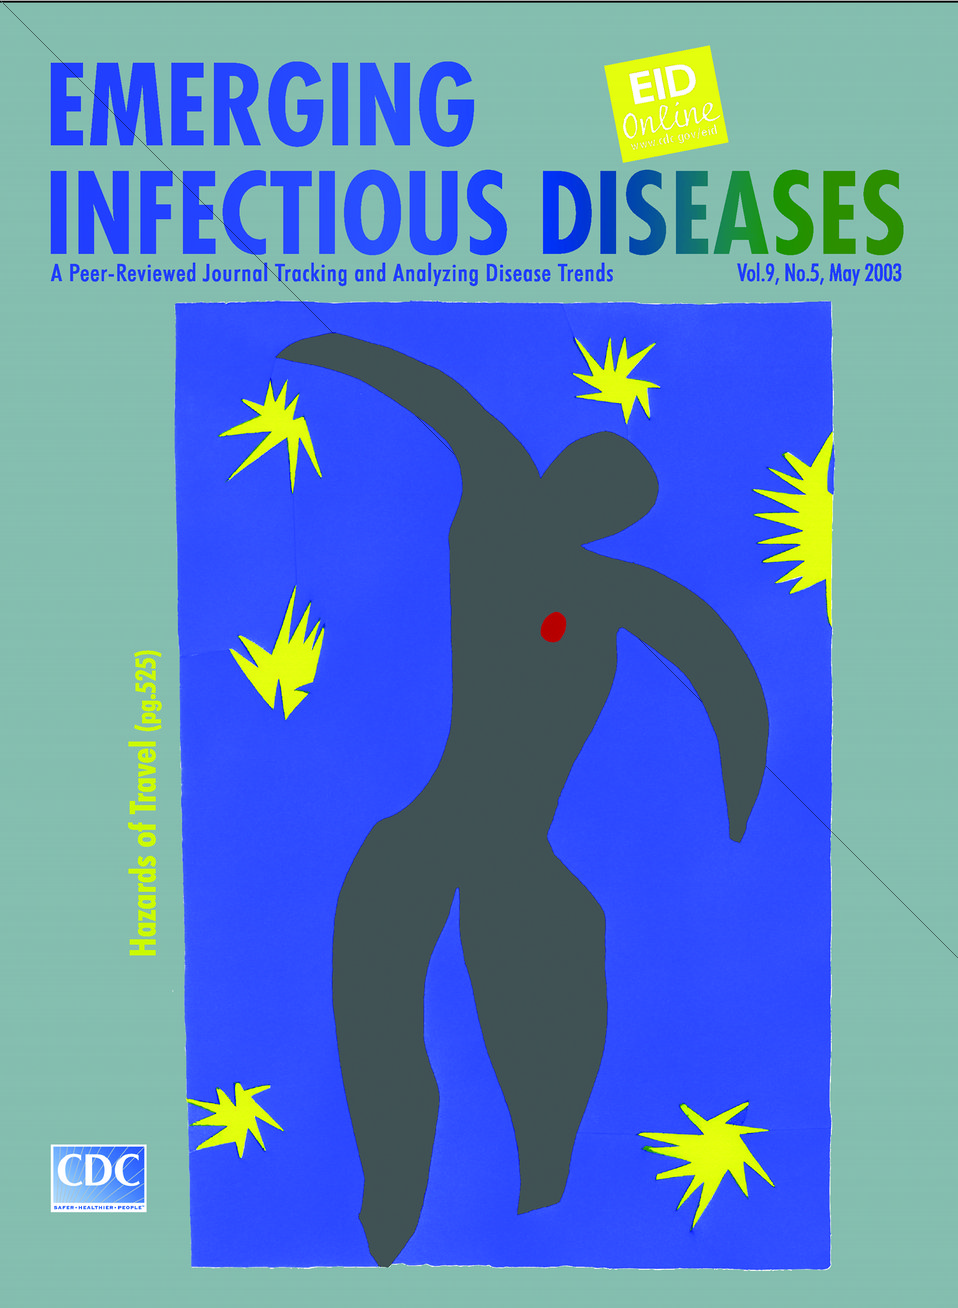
Emerging Infectious Diseases (EID) cover artwork for Volume 9, Number 5, May 2003 issue.